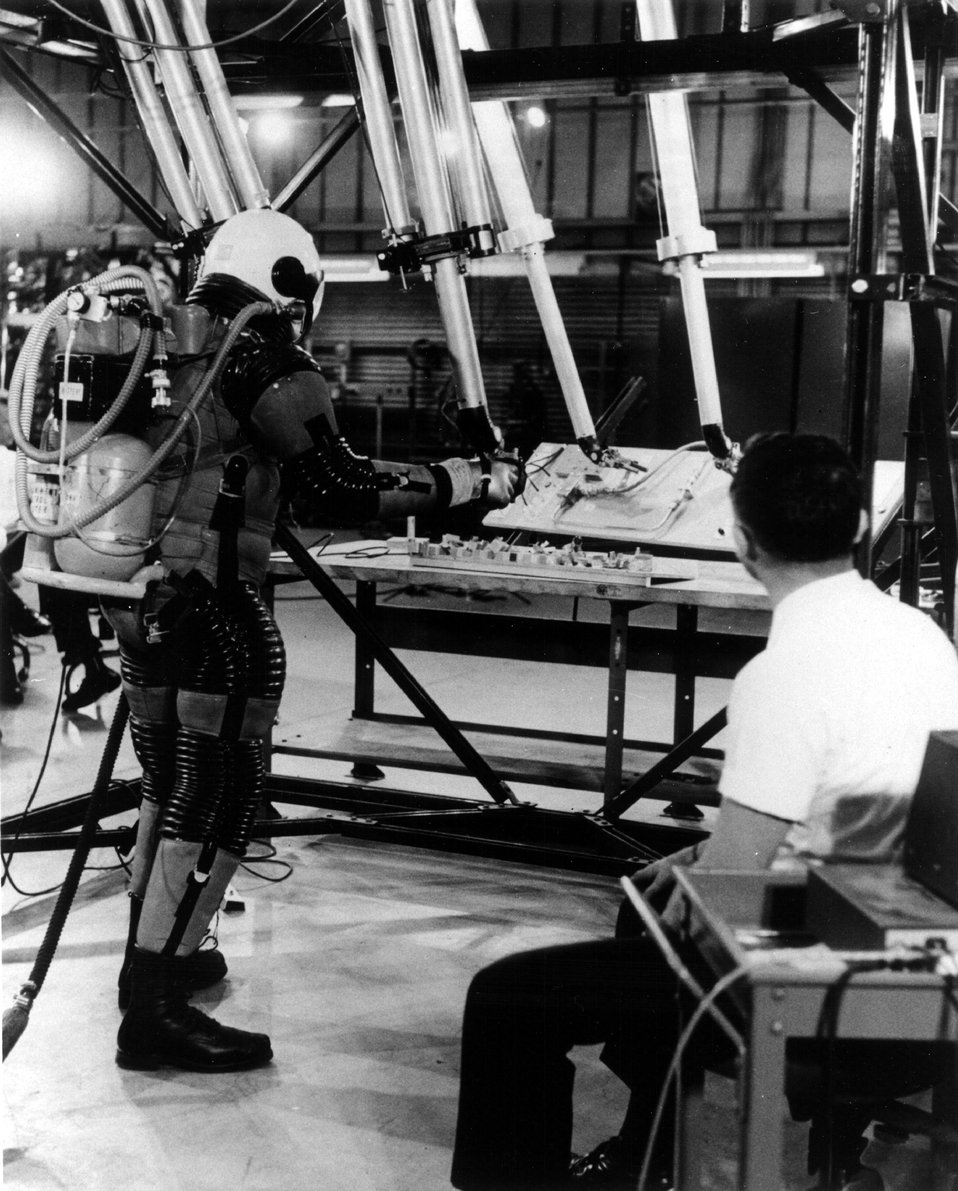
Tests to investigate the feasibility of using 'mechanical hands' in space are being carried out by agencies of the National Aeronautics and Space Administration and AEC's Argonne National Laboratory. c. 1968